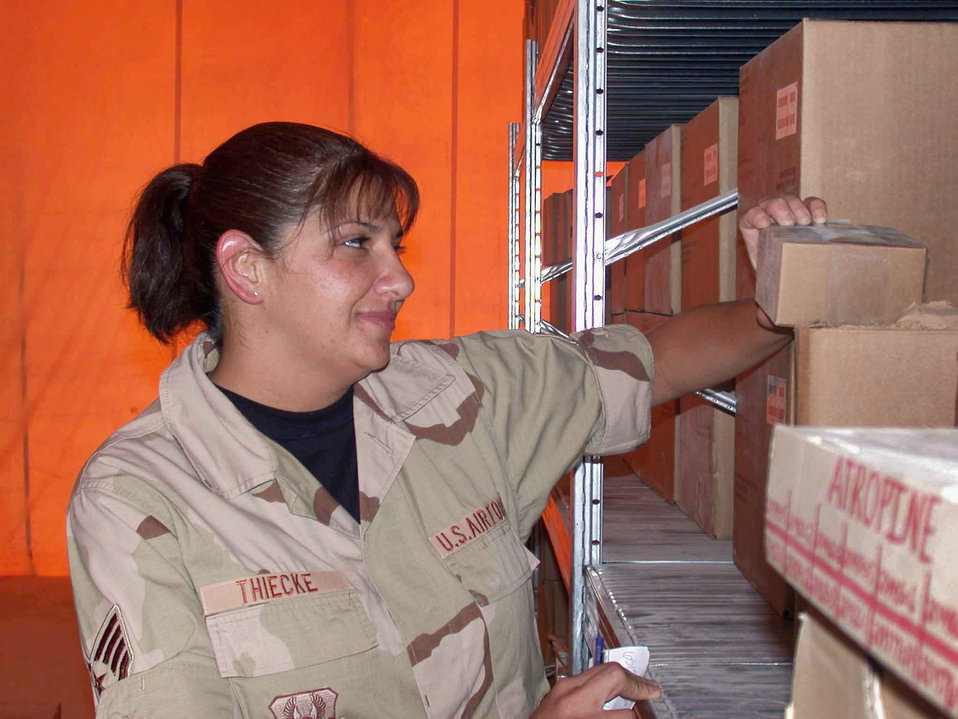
Operation Iraqi Freedom

SOUTHWEST ASIA (AFPN) -- Staff Sgt Tamara Thiecke, 379th Expeditionary Medical Squadron medical logistics NCO in charge of medical war reserve materiels, checks the lot number on a medical item. The 379th EMEDS medical logistics flight maintains more than $200,000 worth of medical supplies.